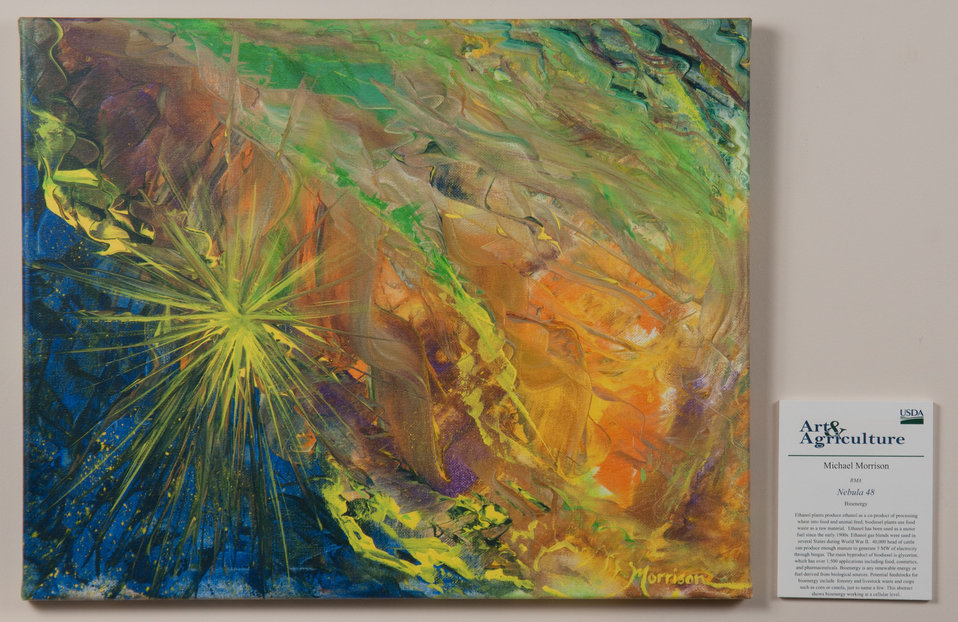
Online Viewer's Choice entries of the 2013 Art & Agriculture, Tuesday, July 9, 2013, in the South Building, Washington, D.C. Themes were expressed by employees from across the department and the contest was open to full-time and part-time USDA employees. Winning artwork will be displayed till the end of the year. U.S. Artistic expression is a creative outlet that is vital for an individual to grow and develop.